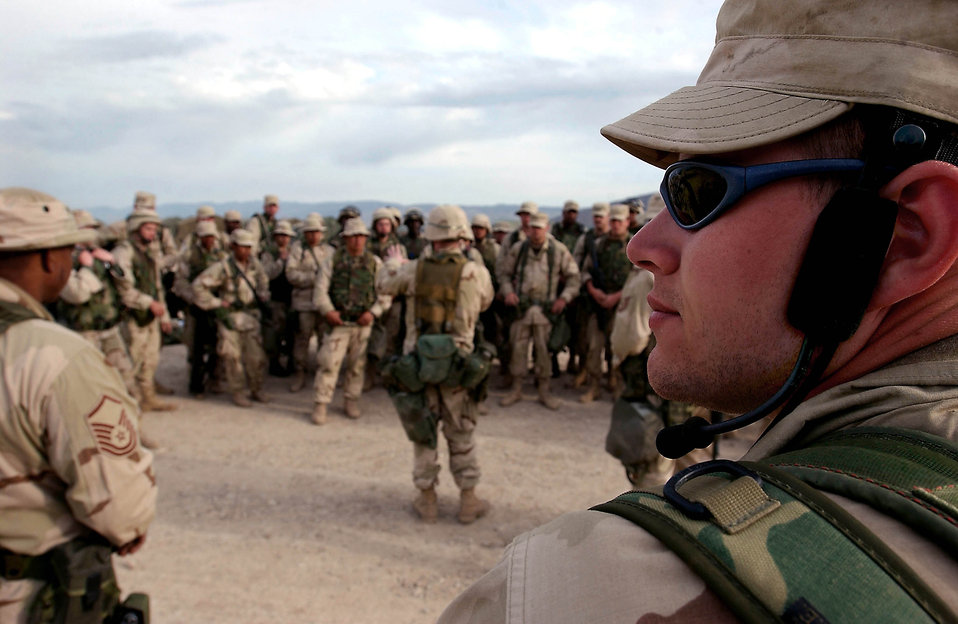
Guard mount

OPERATION IRAQI FREEDOM -- Staff Sgt. Shawn Doll, a security forces troop, awaits the days instructions at the 786th Security Forces Squadron